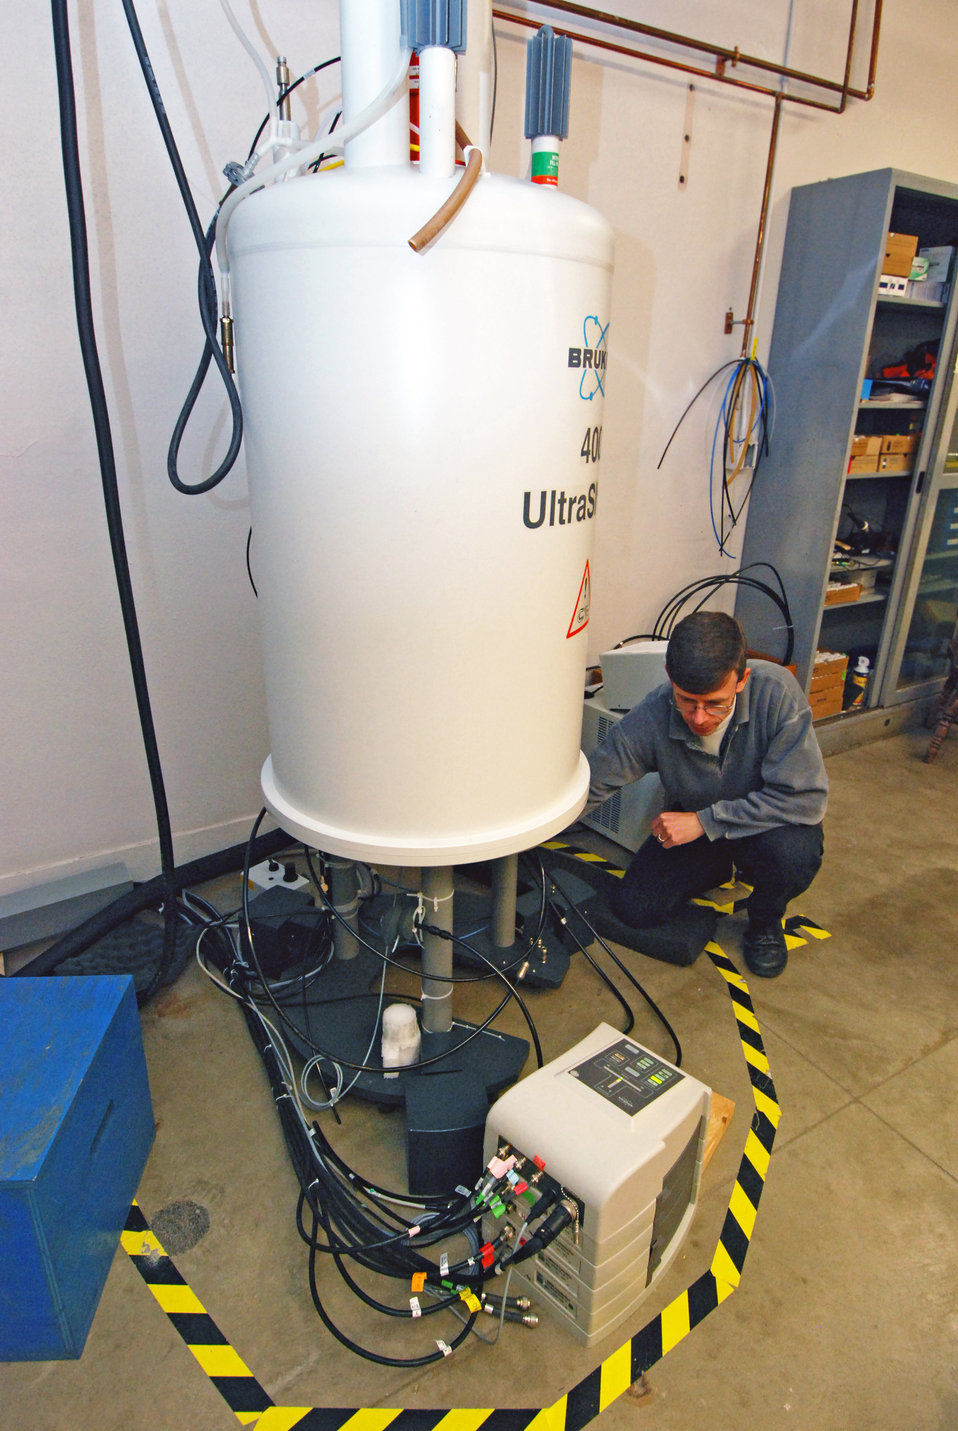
AMES LABORATORY RESEARCHER PREPARES TO SCAN A SAMPLE USING NUCLEAR MAGNETIC RESONANCE (NMR) EQUIPMENT.

Ames Laboratory is a research lab for the Department of Energy that seeks solution to energy related problems through the exploration of chemical, engineering, materials, mathematical and physical.